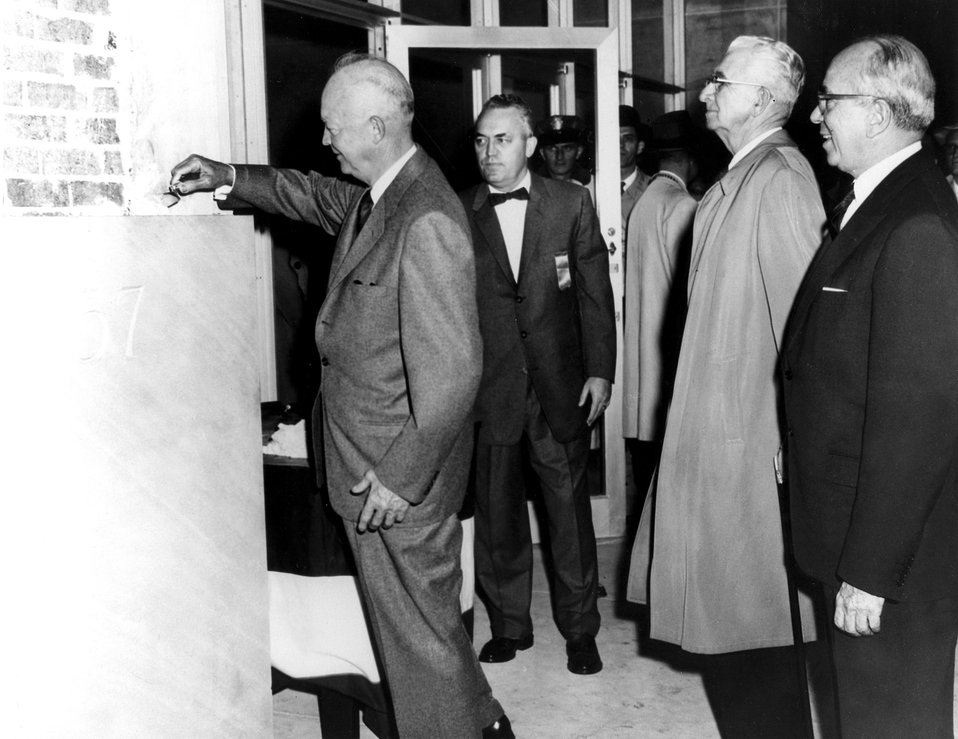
President Eisenhower laying the cornerstone at the dedication of the Germantown building.